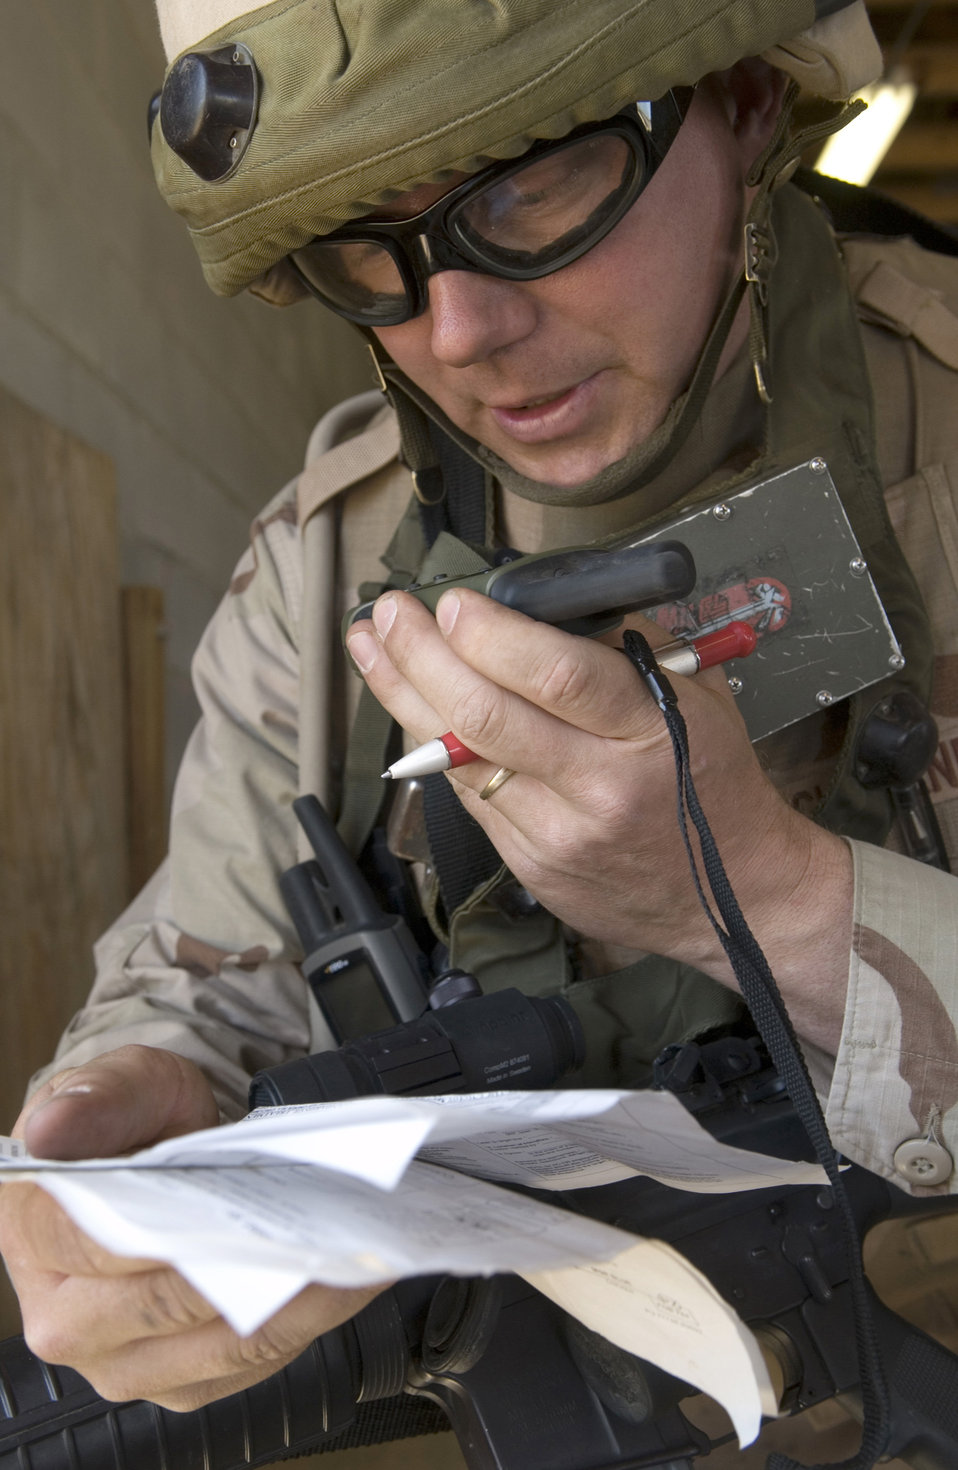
Provincial Reconstruction Team training

Lt. Col. (Dr.) Christopher Scharenbrock calls in a request for airlift after a simulated attack during training on Tuesday, April 4, 2006, at Fort Bragg, N.C. Colonel Scharenbrock is an emergency medical doctor with the 60th Medical Operations Squadron at Travis Air Force Base, Calif. He is a member of the multi-service provincial reconstruction team which is helping with the reconstruction, security and governing of Afghanistan. The team is training in the United States before deploying for a year.